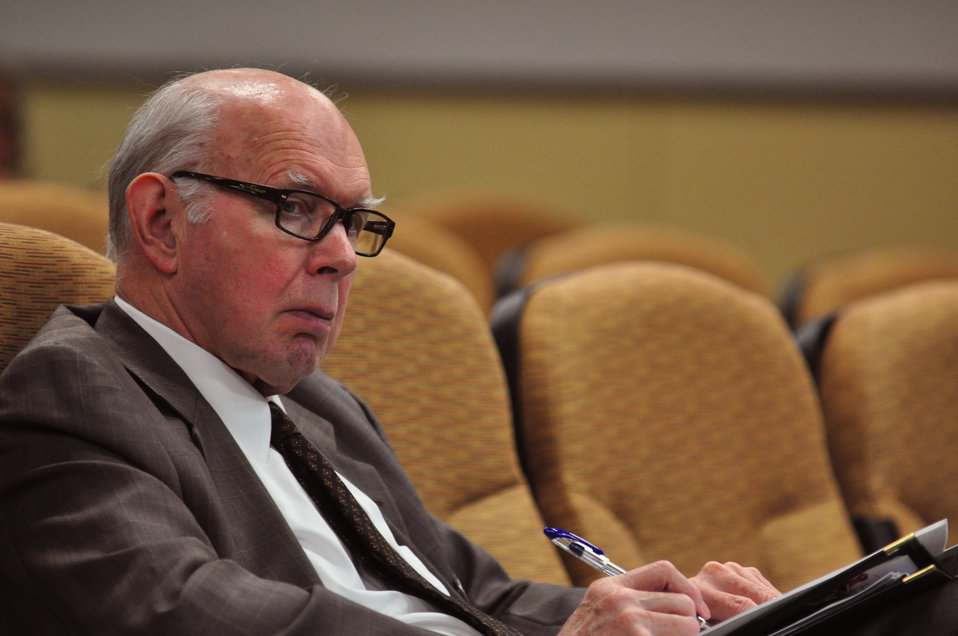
Tennessee Valley Corridor Summit Oak Ridge

13-062 DOE photo Lynn Freeny 5-29-2013 Oak Ridge Tennessee